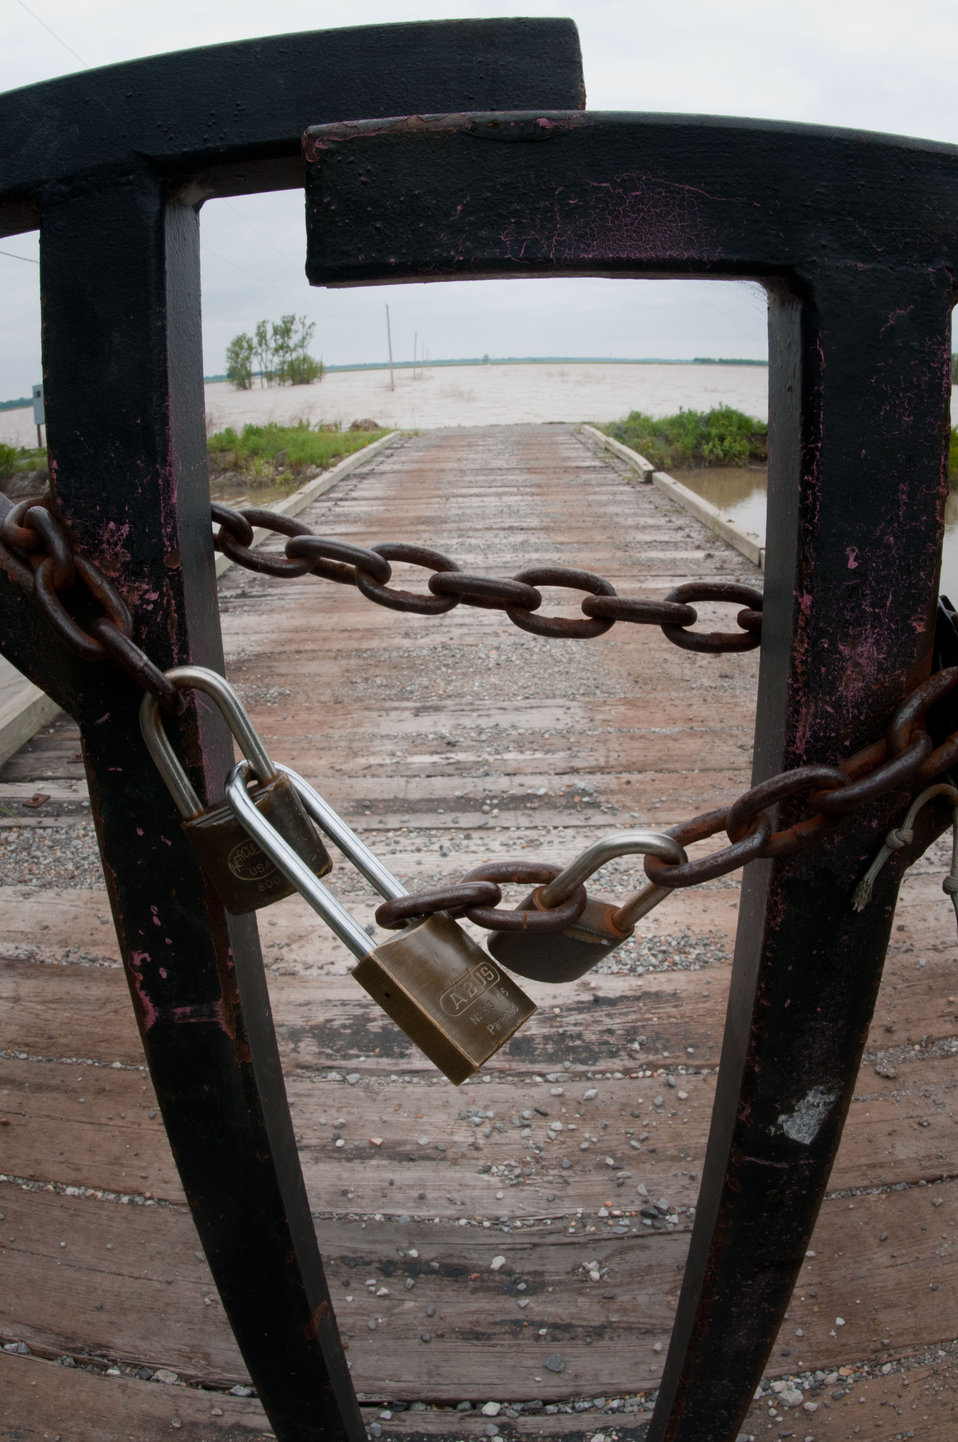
Floods waters from Mississippi River inundated casinos and farms that surround Tunica, MS, on Sunday, May 15. 2011.